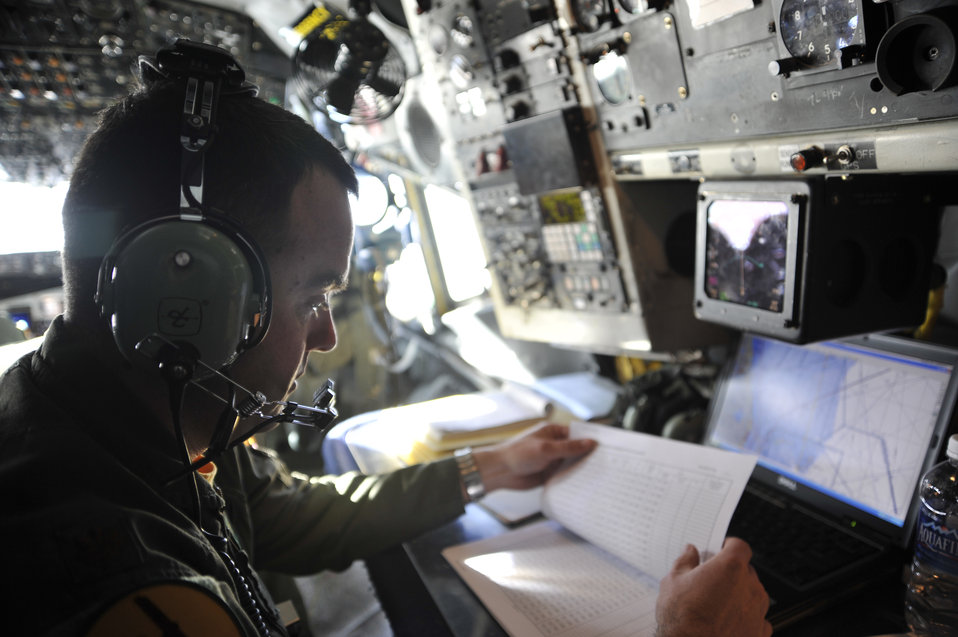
Haiti Observation

Maj. Michael Vanone, Offutt AFB, NE, 45th Reconnaissance Squadron navigator, monitors navigational equipment in an OC-135B Observation Aircraft Jan 16 over Haiti. Army, Navy and Air Force personnel used the capabilities of the OC-135B to photograph Haiti, to get a better understanding of the devastation from the earthquake that hit the island Jan. 12.